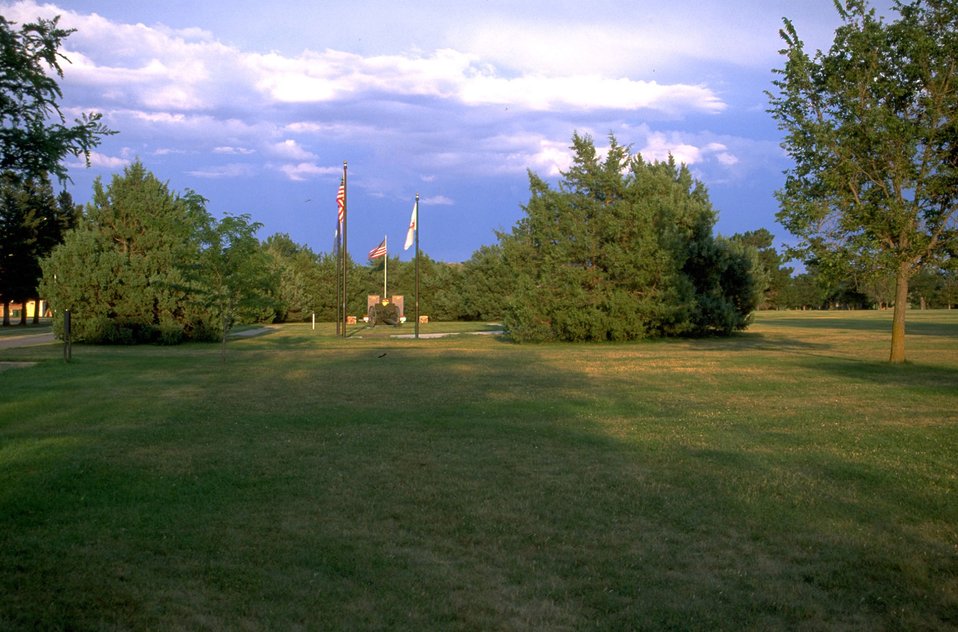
Parade Grounds at the Veterans Administration complex